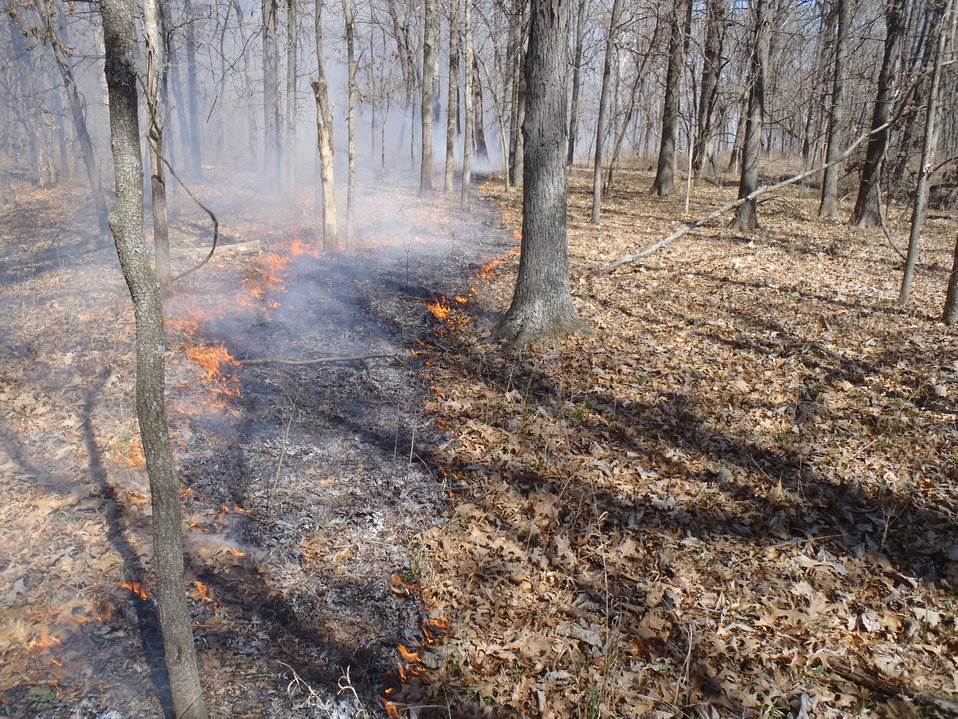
Fire Management in the Bottomland Hardwoods

Fire is used as a management tool in the Bottomland Hardwood forests.